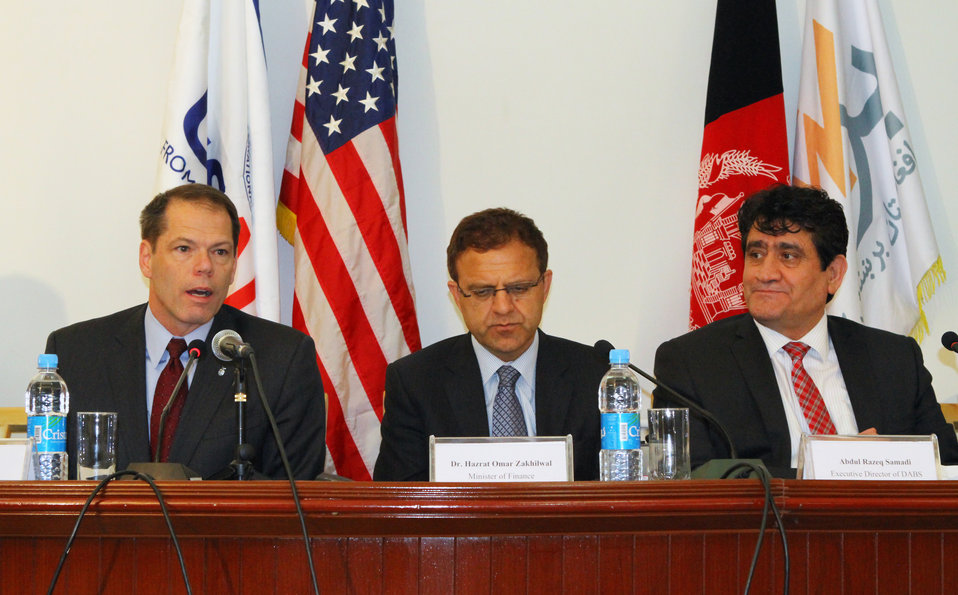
(L-R) USAID Assistant to the Administrator for Afghanistan and Pakistan Affairs Larry Sampler, Afghan Finance Minister Omar Zakhilwal and DABS CEO Abdul Razique Samadi attend contract signing ceremony in Kabul.